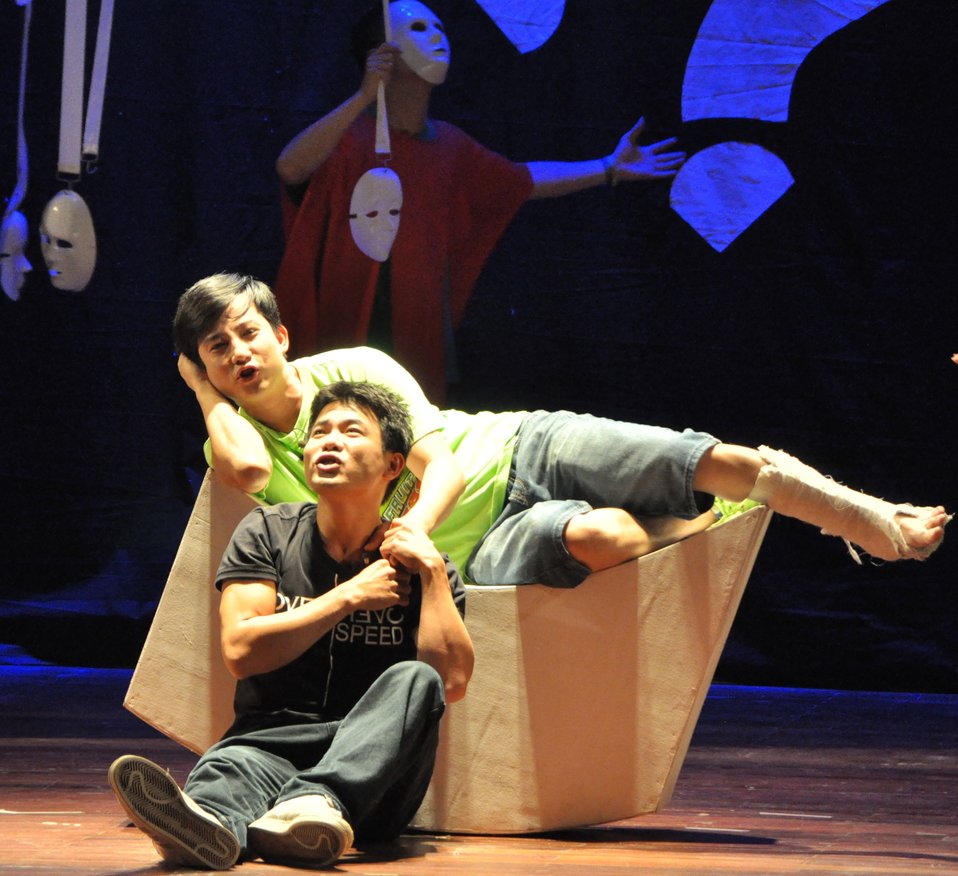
PEPFAR Musical Questions and Exclamations

May 17, 2013